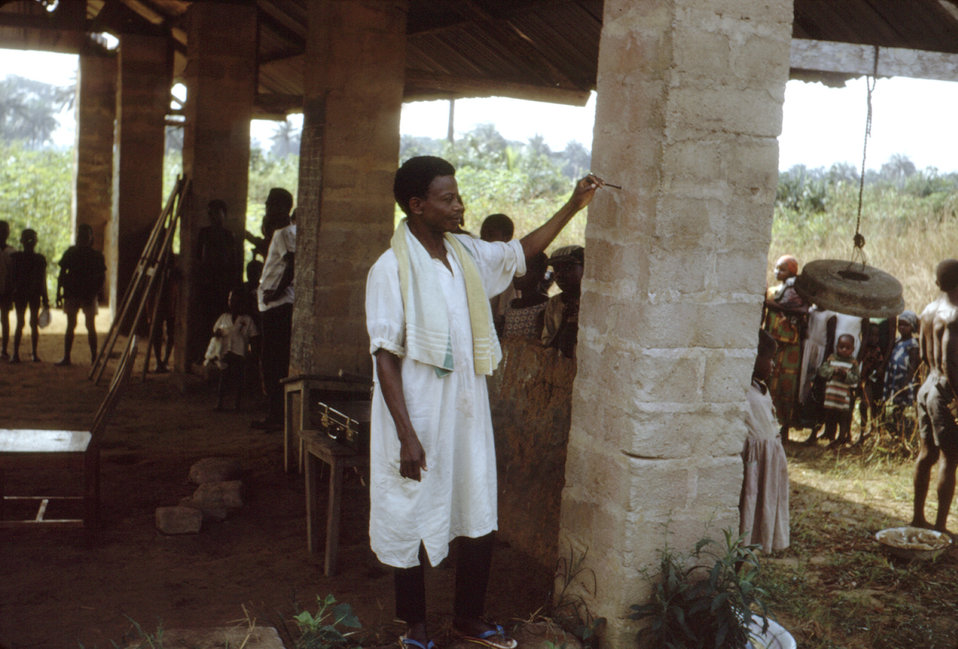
This was an eastern Nigerian school house had been converted into a nutrition assessment, and food distribution center during the Nigerian-Biafran war of the late 1960s.